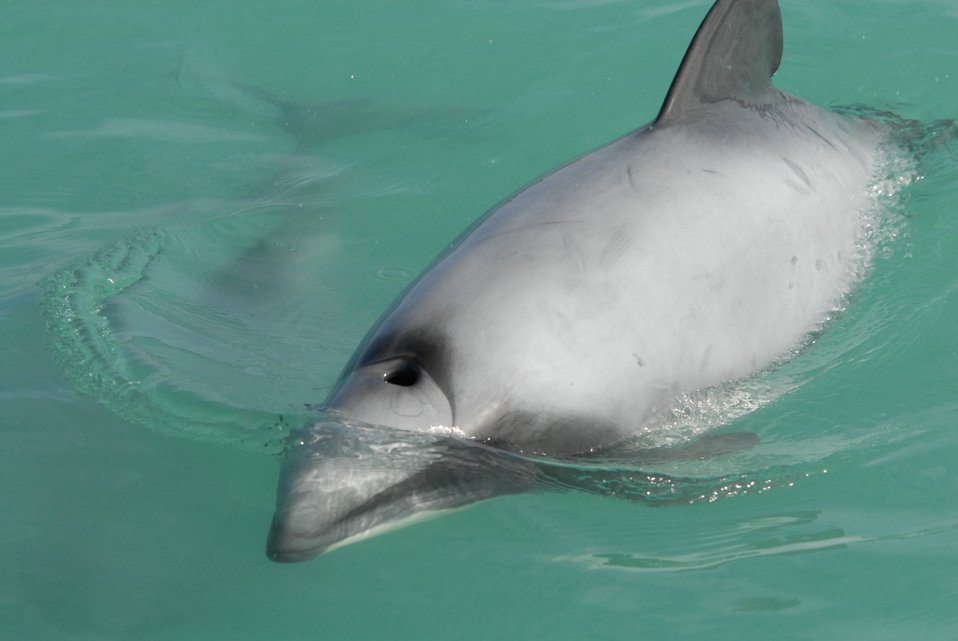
Hector's dolphin (Cephalorhynchus hectori) - the smallest of the dolphin family is found only in New Zealand waters. It is usually about 1.4 meters in length.